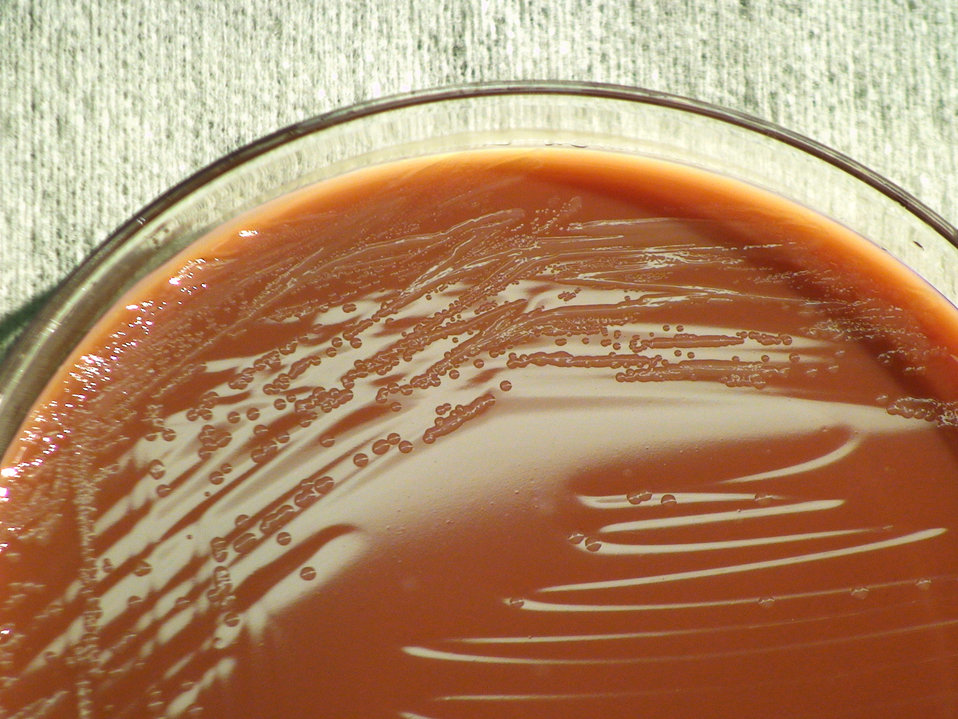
As a closer view of PHIL 12448, this photograph depicts the colonial morphology displayed by Gram-negative Haemophilus influenzae bacteria, which was grown on a medium of chocolate agar, for a 24 hour time period, at a temperature of 37�C.